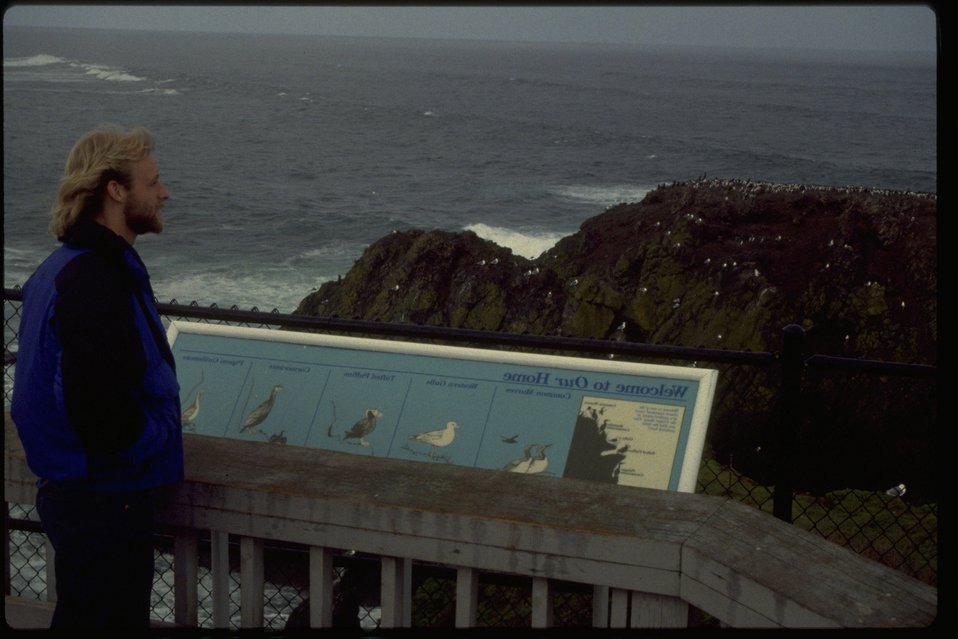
Yaquina Bird Colony visitor standing in front of the sign.